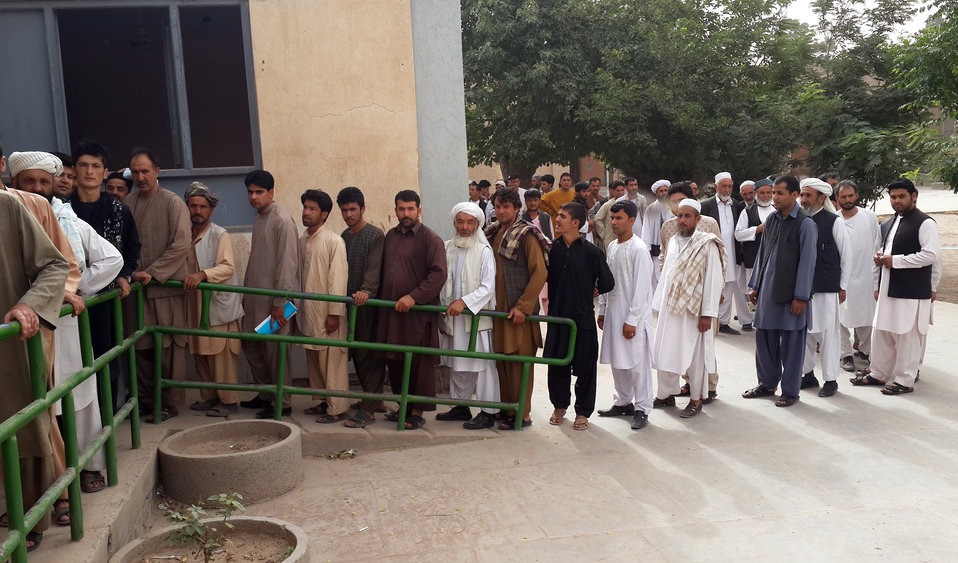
Voters queuing up in front of a polling center in western Herat province.